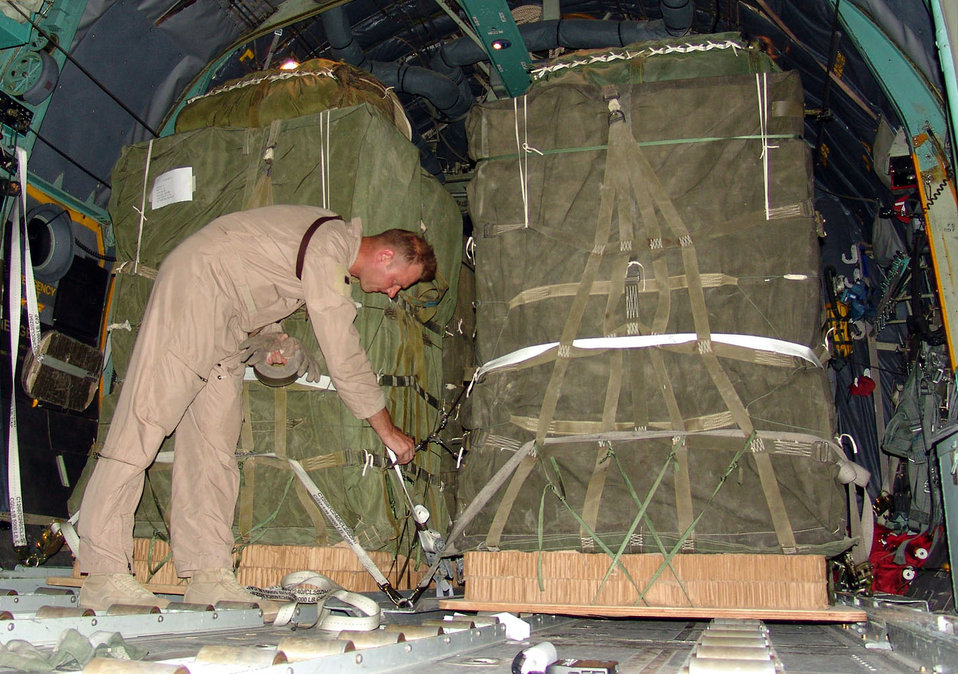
Airmen support Soldiers with airdrop

SOUTHWEST ASIA -- Tech Sgt. Scottie Turner inspects a guillotine knife and Y-adapter extraction cable used for container delivery system airdrops. This airdrop mission delivered 48 bundles containing about 69,000 pounds of food rations for U.S. and Iraqi Soldiers engaged in combat operations against anti-Iraqi forces. Sergeant Turner is a loadmaster with the 737th Expeditionary Airlift Squadron at a forward-deployed location and is from Pope Air Force Base, N.C.